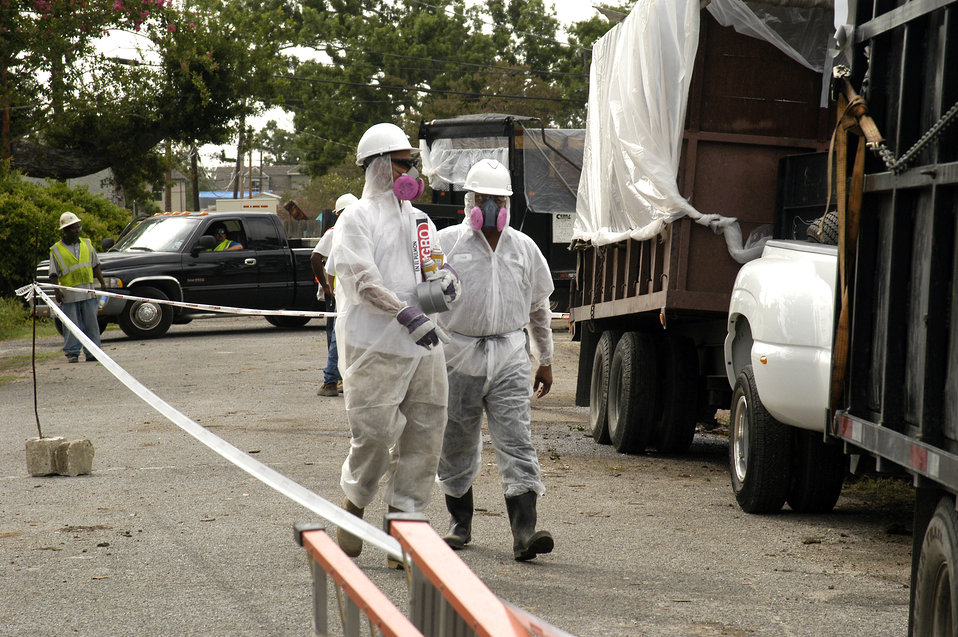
Many of the older homes and buildings in the New Orleans, LA, locale that were destroyed by Hurricane Katrina contained asbestos material (i.e. asbestos roofing tiles, transite siding, insulation, floor tiles, and popcorn ceilings). The U.S. Army Corps of Engineers (USACE) was mandated to follow strict environmental protocols in the demolition of these homes that were designated Regulated Asbestos Containing Material (RACM) demos. Personnel working inside the “hot zone” wore special suits with a respirator to prevent ingestion of asbestos particulates that might become airborne during the demolition project. All workers inside the “hot zone” wore protective clothing and respirators including those responsible for securing the contaminated material inside trucks that were lined with thick plastic and sealed before the trucks could leave the area.